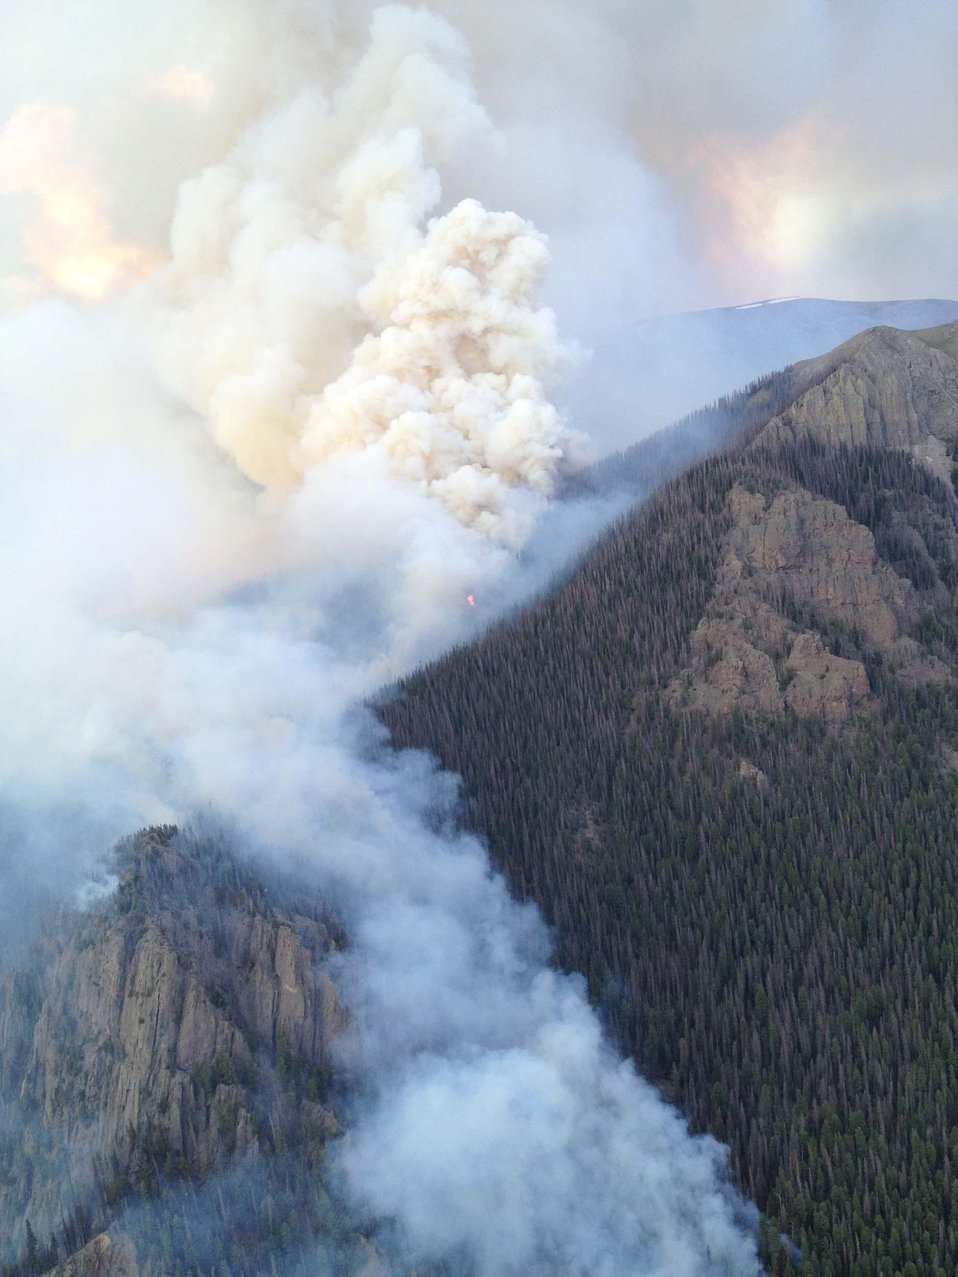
Smoke column rises from the West Fork Comlpex Fire on Jun. 16, 2013 from about 20,000 feet in altitude. The West Fork Complex Fire is made of four fires, Papoose Fire, East Zone of West Fork Fire, West Zone of West Fork Fire, and Windy Pass Fire. The fires located in the vicinity of Pagosa Springs, CO began on Jun. 05, 2013 by lightning strikes. The multiple fires have consumed approximately 70, 262 acres.